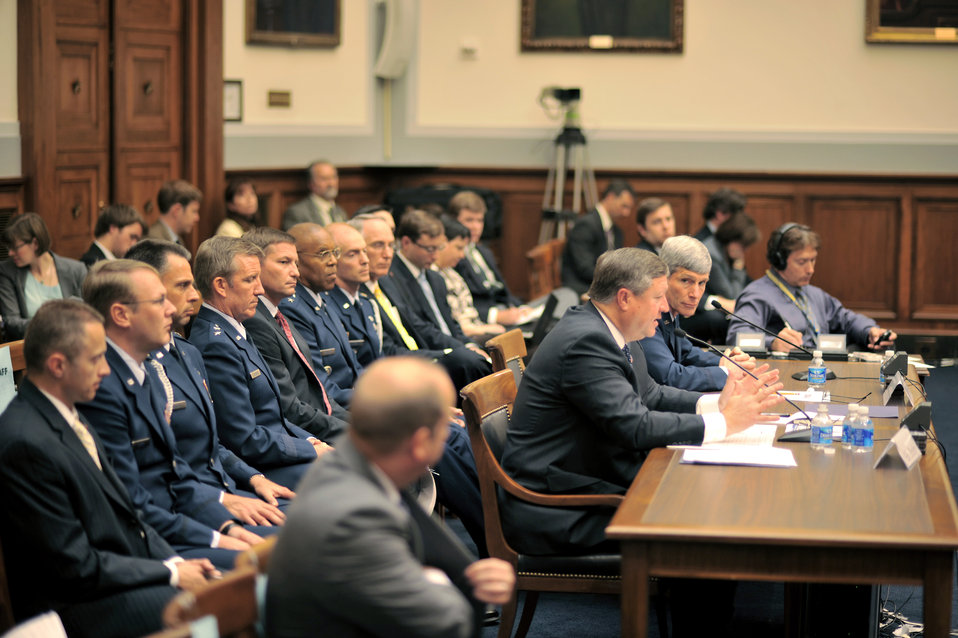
Air Force leaders issue posture statement

Secretary of the Air Force Michael Donley (left at table) testifies with Air Force Chief of Staff Gen. Norton Schwartz before the U.S. House Armed Services Committee on the current Air Force posture May 19 in the House Rayburn Building in Washington, D.C. The two Air Force leaders spent most of the week before both the House and Senate providing feedback with regard to the upcoming budget and current and projected capabilities.